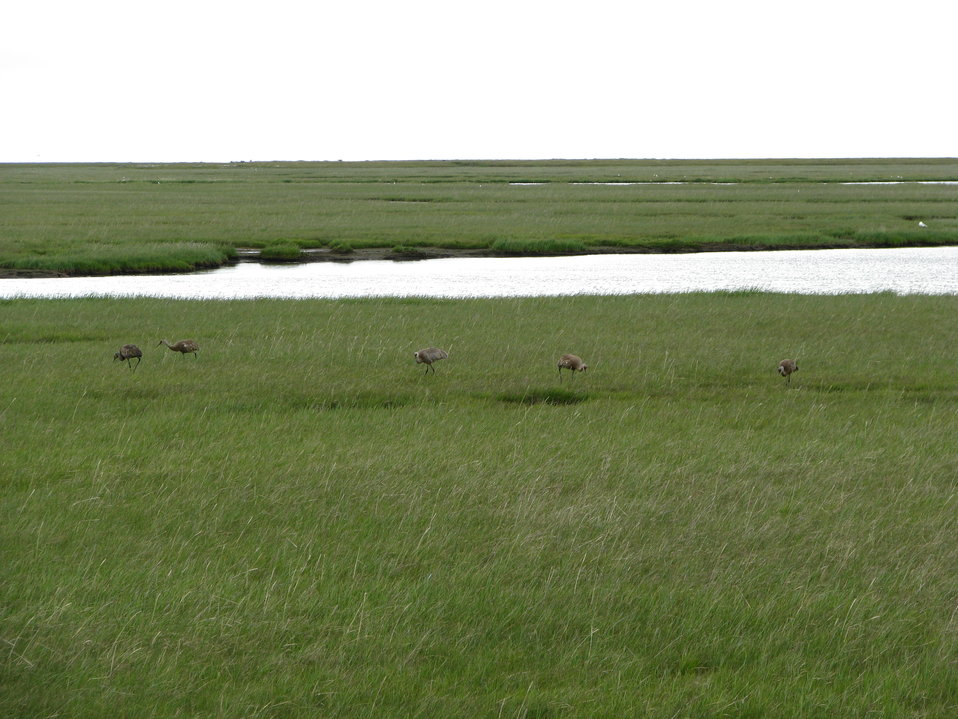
Group of Sandhill Cranes

Yukon Delta NWR